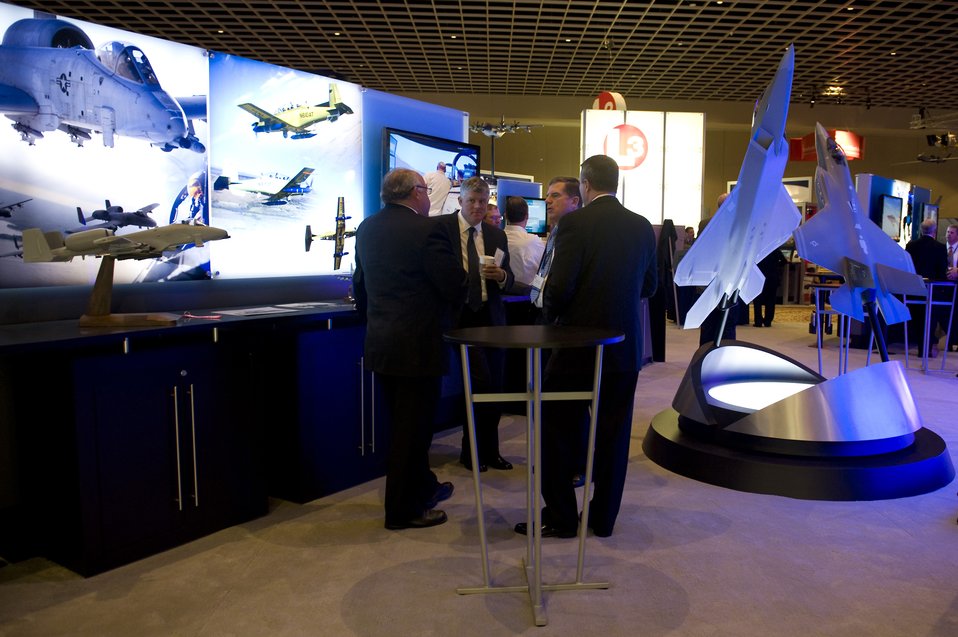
Generals discuss Guard, Reserve, on call Air Force

The Air Force Association's Air Warfare Symposium and Technology Exposition showcases the latest military technology Feb. 18, 2010, at the Rosen Shingle Creek Hotel in Orlando, Fla.